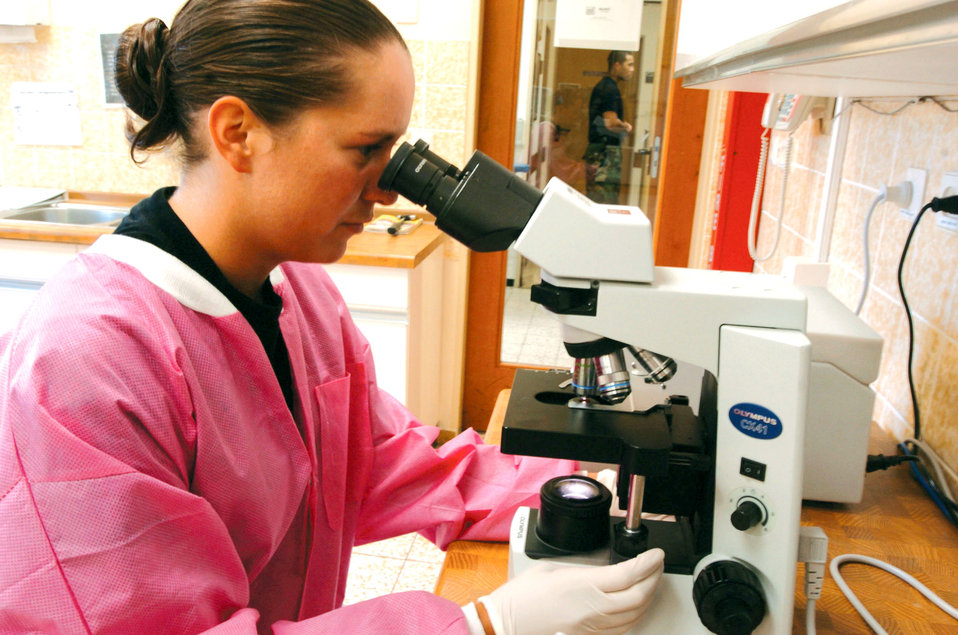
A closer look

SPANGDAHLEM AIR BASE, Germany (AFPN) -- Senior Airman Jennifer Attridge analyzes urine sample at the laboratory here. During urinalysis, lab technicians can check for red and white blood cells, bacteria, yeast, mucus and epithelial cells. The technicians assist physician's assistants and nurses, and can help diagnose potential illnesses. Airman Attridge is assigned to the 52nd Medical Support Squadron.